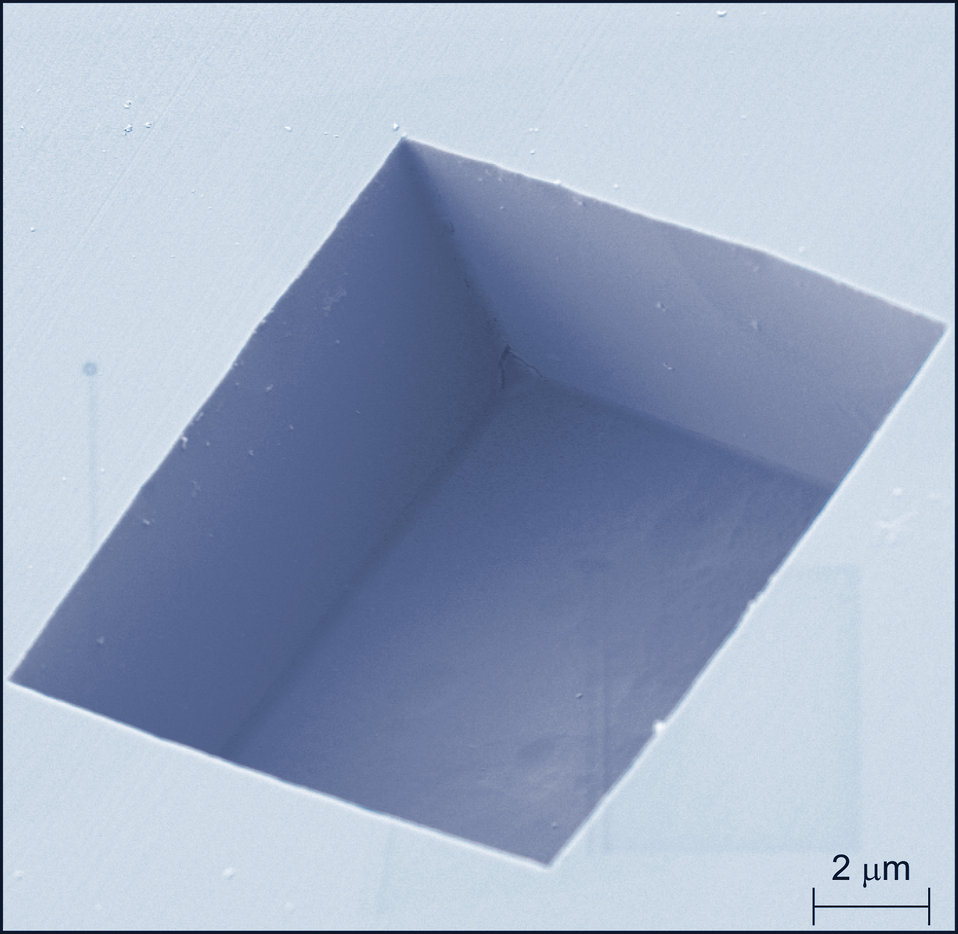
NIST Polishes Method for Creating Tiny Diamond Machines

This colorized electron microscope image reveals the boxy shape of the pits the NIST team etched into the diamond surface, exhibiting their smooth vertical sidewalls and flat bottom. The pits were between 1 and 72 micrometers in size.